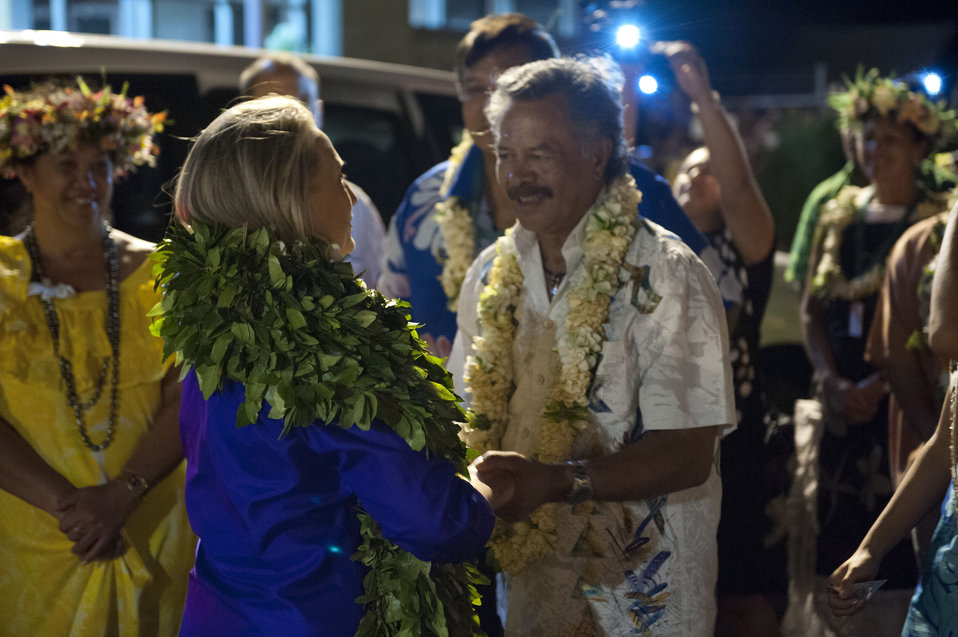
Secretary Clinton Shakes Hands With Prime Minister Puna of the Cook Islands

U.S. Secretary of State Hillary Rodham Clinton is greeted upon arrival in Rarotonga by Prime Minister Henry Puna of the Cook Islands, August 30, 2012.